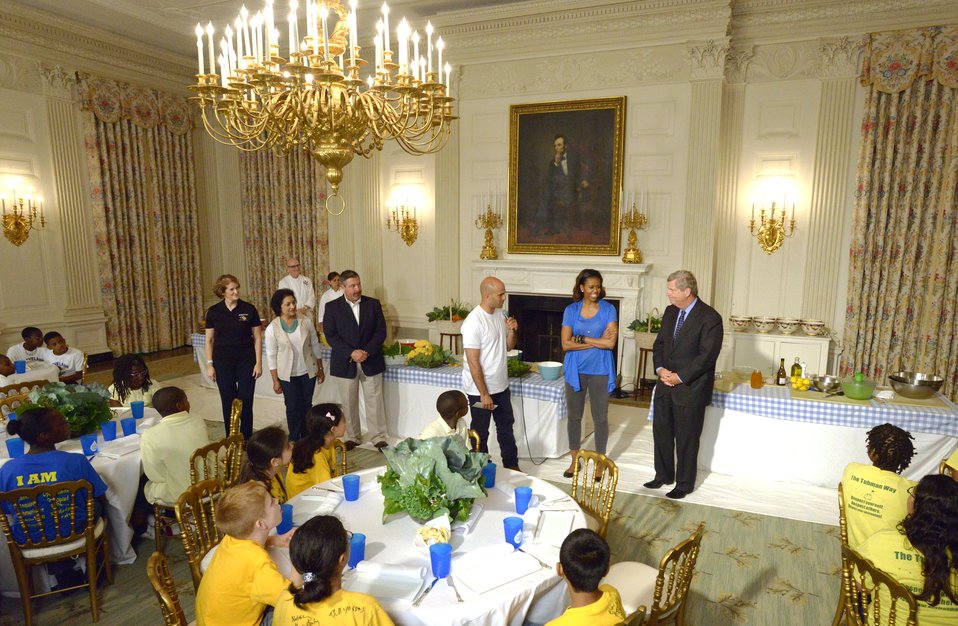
White House Executive Chef Sam Kass, First Lady Michelle Obama and Agriculture Secretary Tom Vilsack join Washington, D.C. students from Cleveland Elementary School, Friendship Public Charter School, Kimball Elementary School, Bancroft Elementary School, Harriet Tubman Elementary School, who helped plant the garden in the spring make lunch from this year’s summer crop with the help of White House chefs and visiting school nutrition directors from Orlando, FL, Dallas, TX, and West Virginia in the State Dining Room of the White House in Washington, D.C. on Thursday, Jun. 12, 2014.